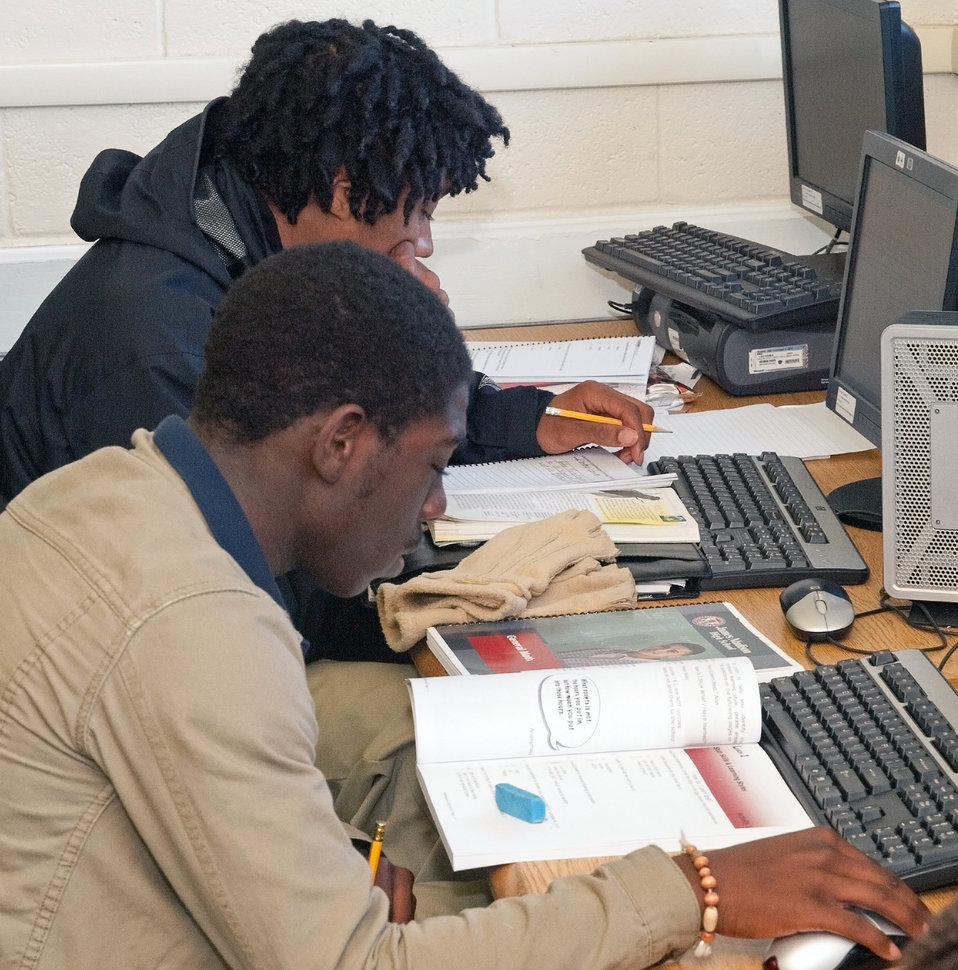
Students Davon Smith (background) and Lindsay Norris study at the Job Civilian Conservation Corp Center (JCCCC) in Harpers Ferry, WV on Nov. 8, 2012. The U.S. Forest Service manages 28 Job Corps Civilian Conservation Centers.